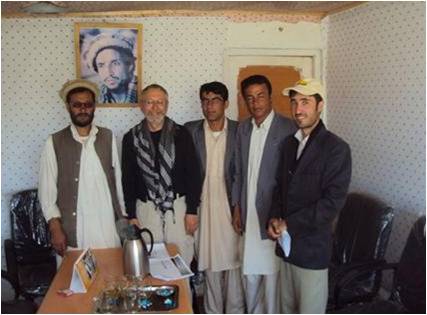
Wheat Harvest and Storage - Part II